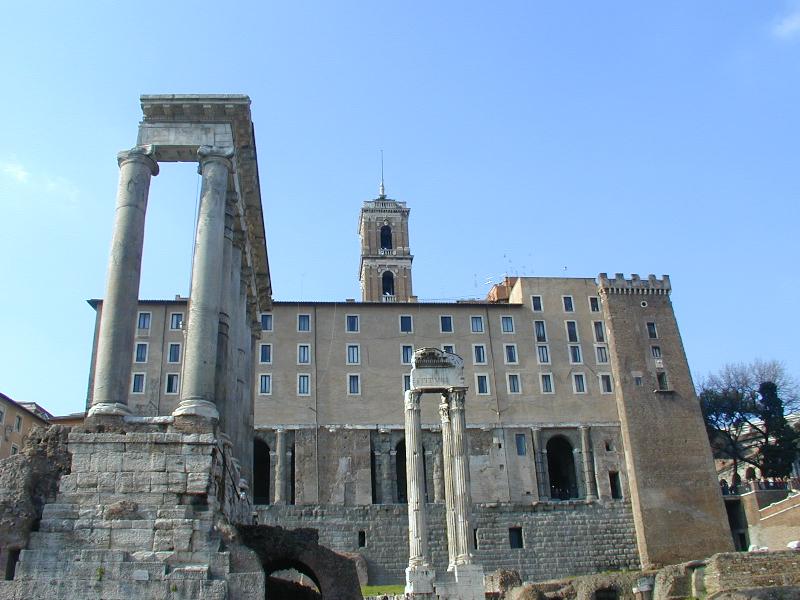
Campitelli - 010218 03 campidoglio